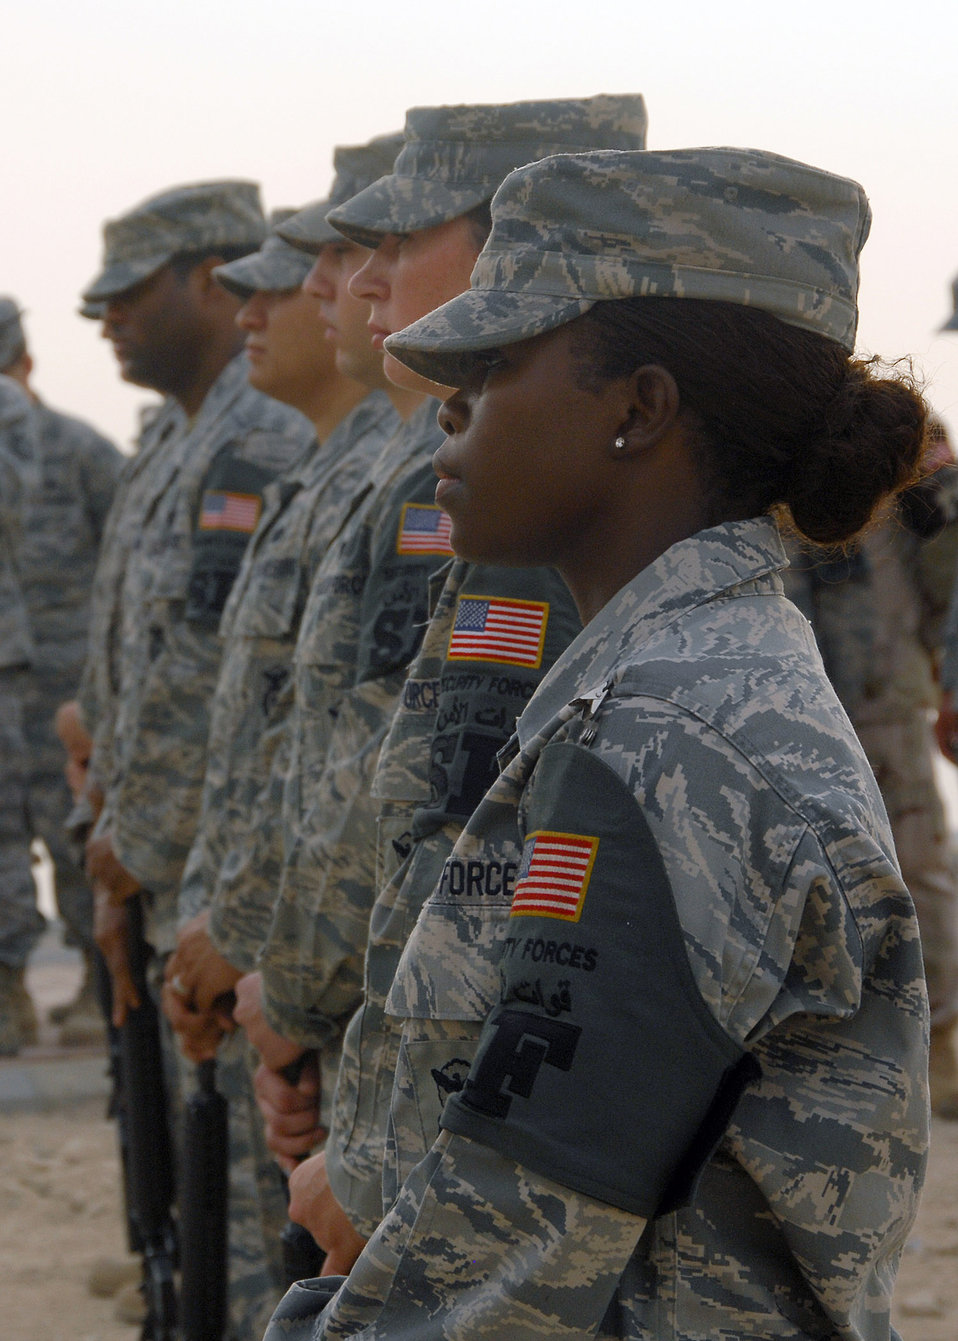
Ceremony inspires members to never forget Sept. 11

Members of the 387th Air Expeditionary Group rifle team prepare to render a 21-gun salute during the Sept. 11 Remembrance ceremony Sept. 11 at an air base in Southwest Asia. The ceremony included a wreath-laying ceremony and the playing of